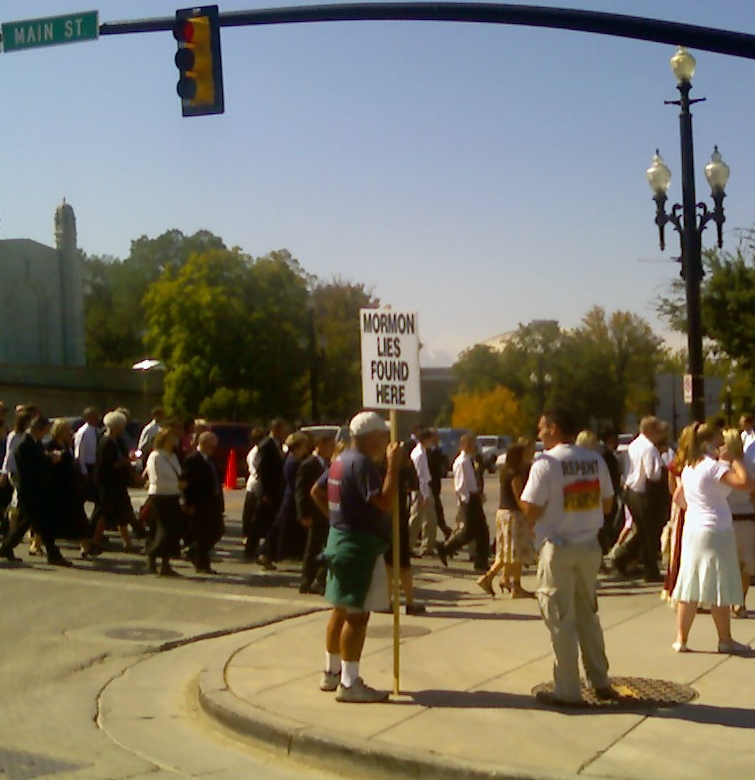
Protesters during an general conference of The Church of Jesus Christ of Latter-day Saints (LDS Church) in en:2006.
en:Category:Protests en:Category:Images of Salt Lake City, Utah